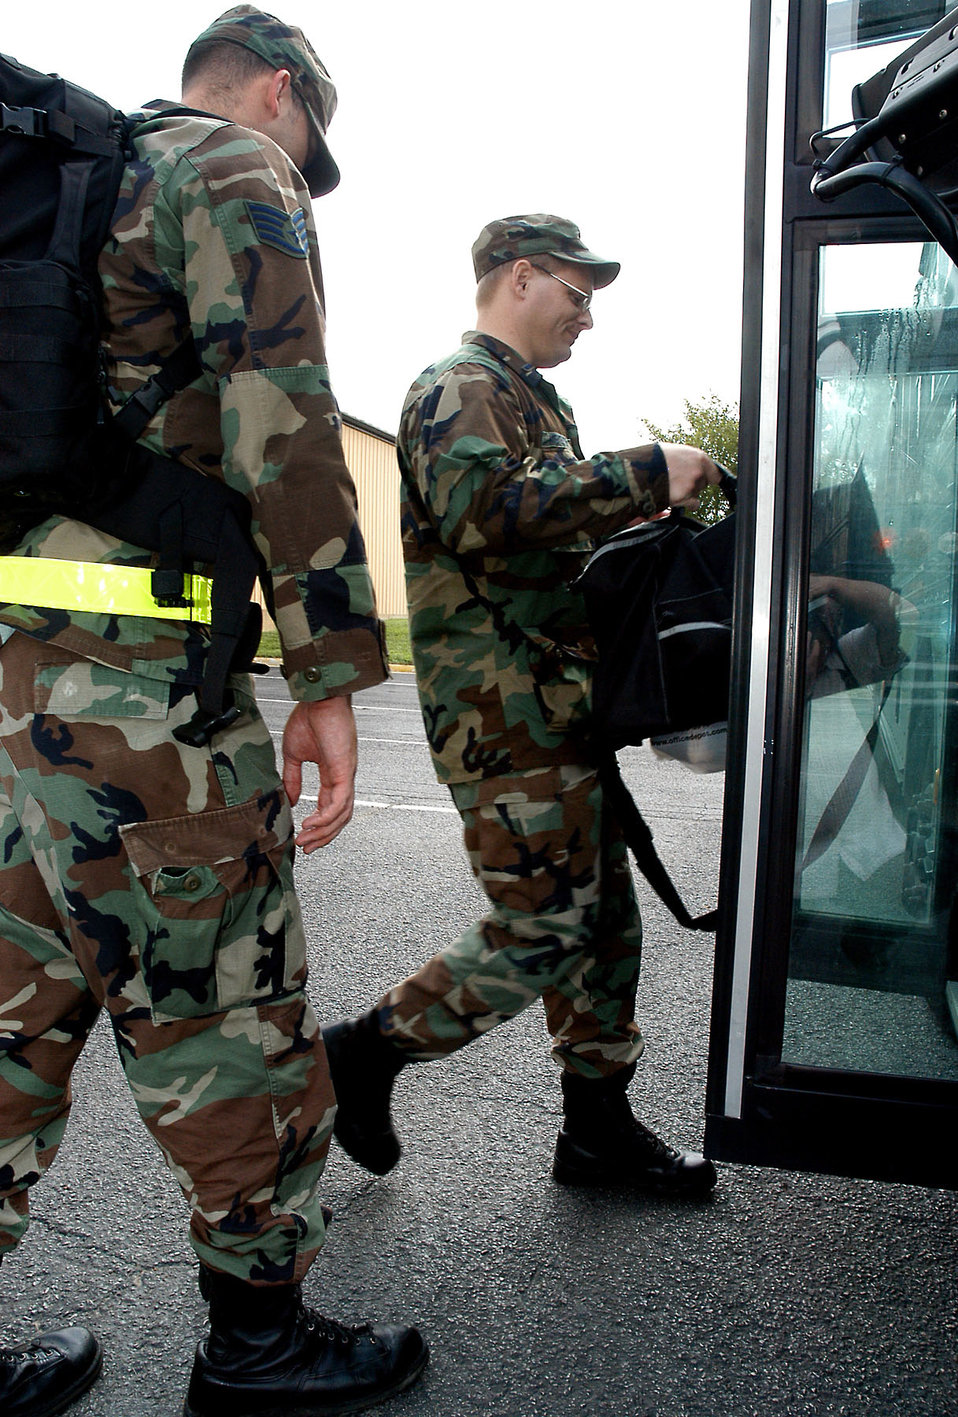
EMS team deploys to New Orleans

SCOTT AIR FORCE BASE, Ill. -- Airmen with the 375th Medical Group here board buses as part of their first leg of a deployement to hurricane-ravaged New Orleans on Sept. 1, where they will provide medical support to relief agencies already present in the area. The Expeditionary Medical Support Team comprised about 80 doctors, nurses, medical technicians and support personnel.